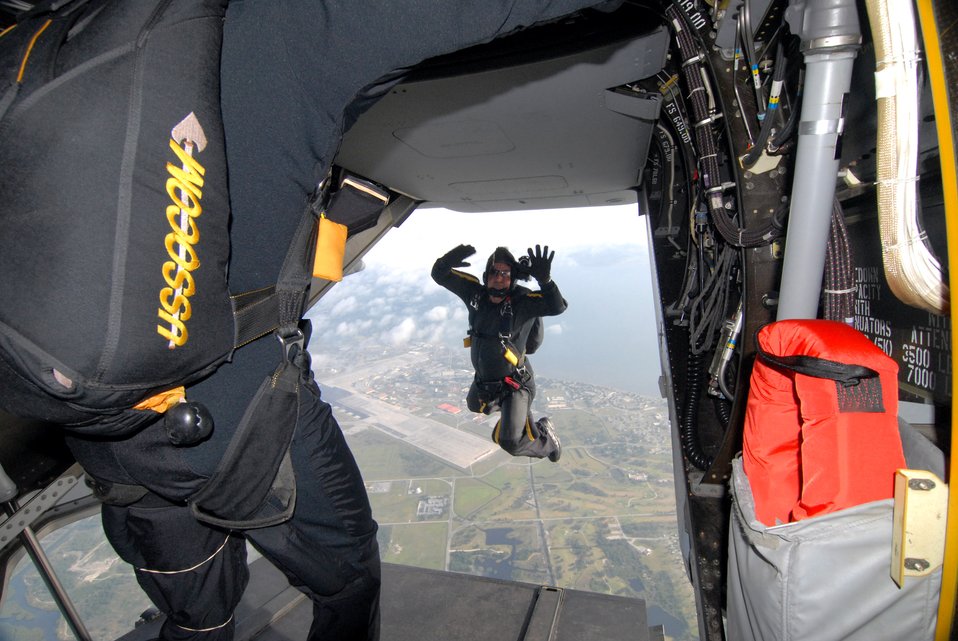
AFSOC helps USSOCOM celebrate 20 years

Andy Serano, a member of the U.S. Special Operations Command parachute team, jumps from a CV-22 Osprey over MacDill Air Force Base, Fla., April 27. The Osprey is from Air Force Special Operations Command's 8th Special Operations Squadron at Hurlburt Field, Fla.